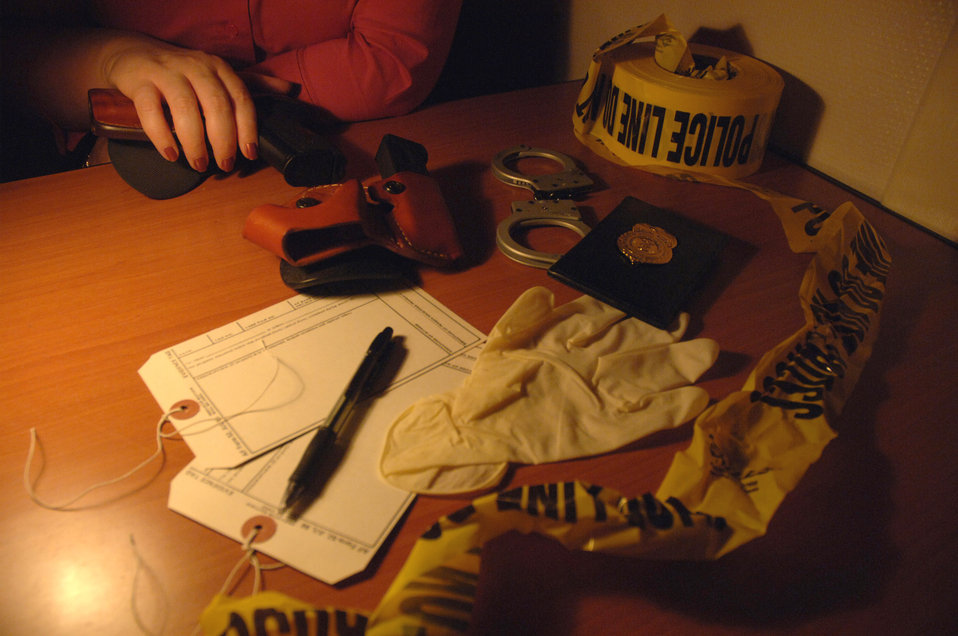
No typical day for OSI agents

An OSI agent with some of the tools of the trade.